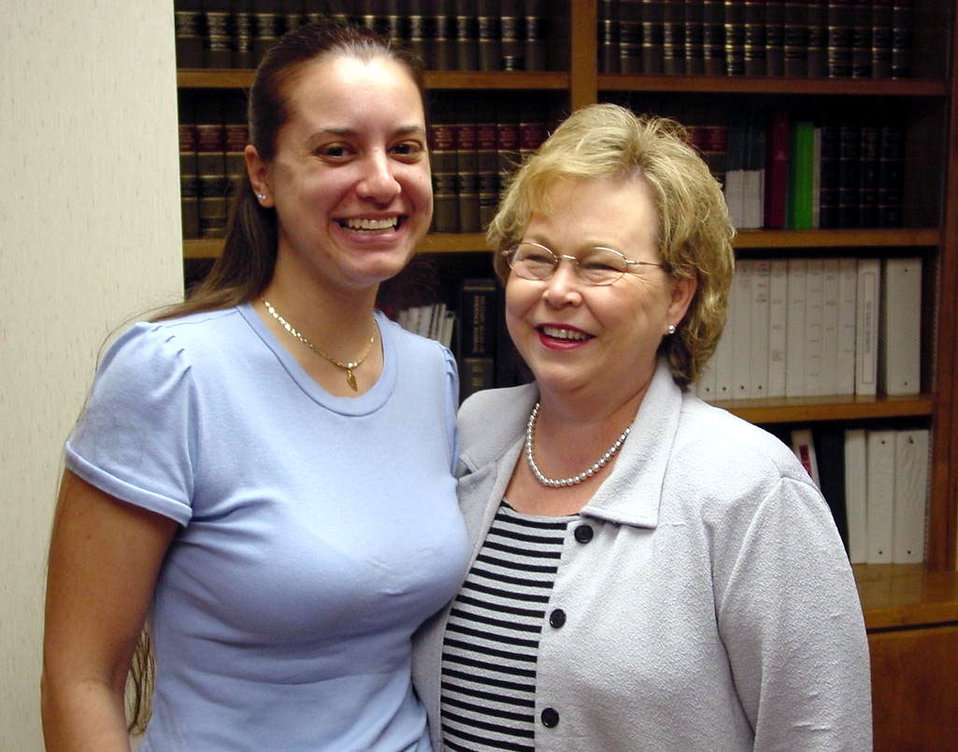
I'm married to an airman

MOODY AIR FORCE BASE, Ga. -- Andrea Evans (left) and Judy Lanier, a Lanier County, Ga. probate court judge pose for a photo at the area defense counsel office here. Andrea married Senior Airman James Evans by proxy April 8. James is a security forces airman currently deployed with the 444th Air Expeditionary Group supporting Operation Iraqi Freedom.